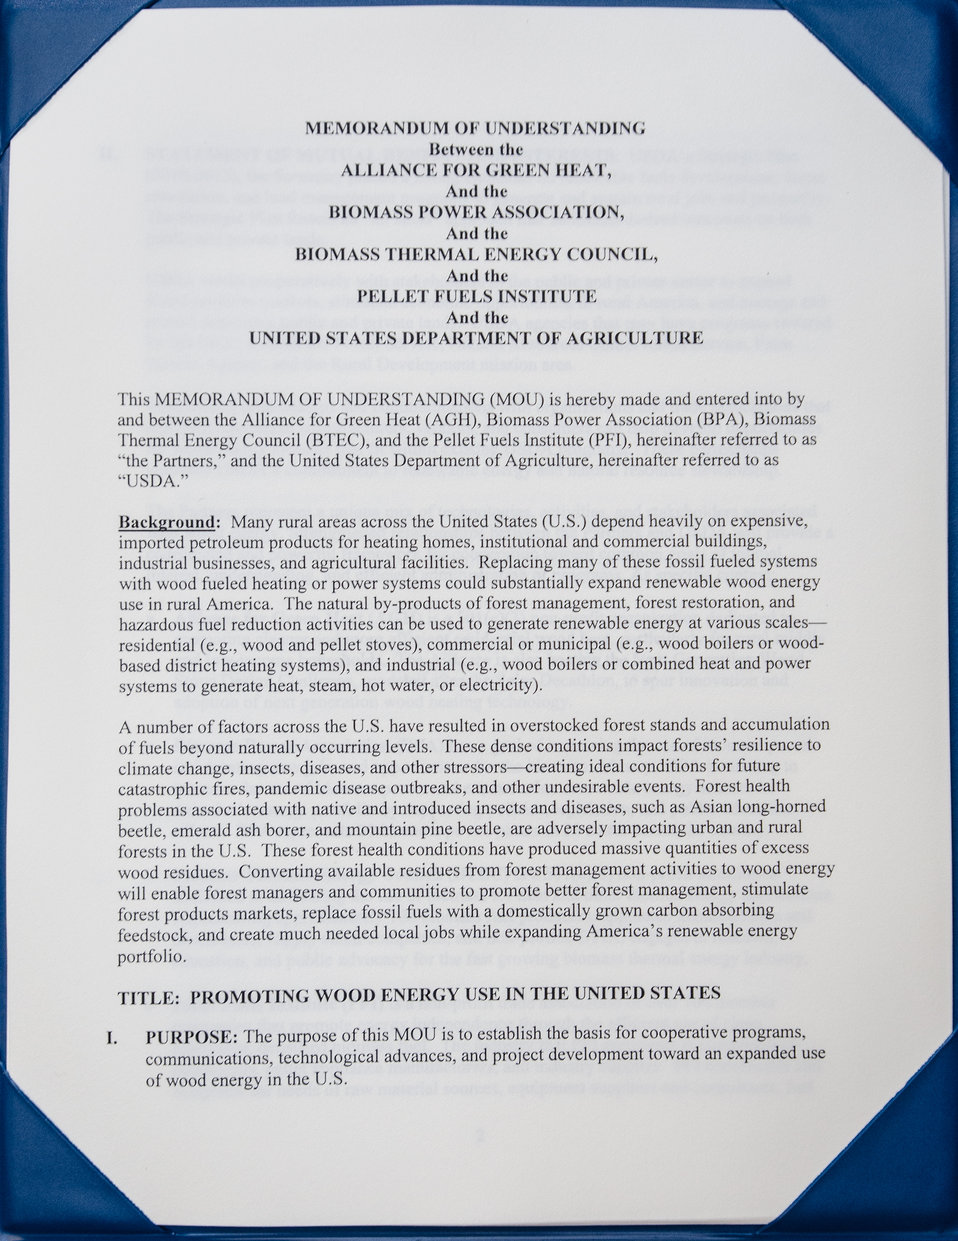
U.S. Department of Agriculture (USDA) Deputy Secretary Krysta Harden hosts the signing of the USDA Bioenergy Memorandum of Understanding and was joined by leaders from, Biomass Power Association, President and CEO Bob Cleaves; Pellet Fuels Institute Executive, Director Jennifer Hedrick; Biomass Thermal Energy Council, Executive Director Joseph Seymour; and Alliance for Green Heat, President John Ackerly, for the announcement of the new partnership agreement, at the USDA Headquarters, in Washington, D.C., on Wednesday, September 11, 2013. Moderating the event is Under Secretary for Rural Development Doug O’Brien.
The partnership agreement focuses on promoting wood energy nationwide as a means to address fire risks, bolster rural economic development, improve air quality, and help meet the Obama Administration’s renewable energy and energy efficiency goals. These organizations support the use of wood energy across the scale of users – from residential users, to commercial and intuitional facilities, to industrial production of heat and or electricity to drive businesses and feed the electrical grid.
Under the terms of the five grants announced by Deputy Secretary Harden, private, state and federal organizations will work together to stimulate the development of additional wood energy projects in their states. Collectively, $2.9 million will be spent o this effort -- $1.1 million on federal funds and $1.8 million in non-federal funds. For more information o0n the cooperative agreement program, visit na.fs.fed.us.werc/wood-energy/ USDA Photo by Lance Cheung.